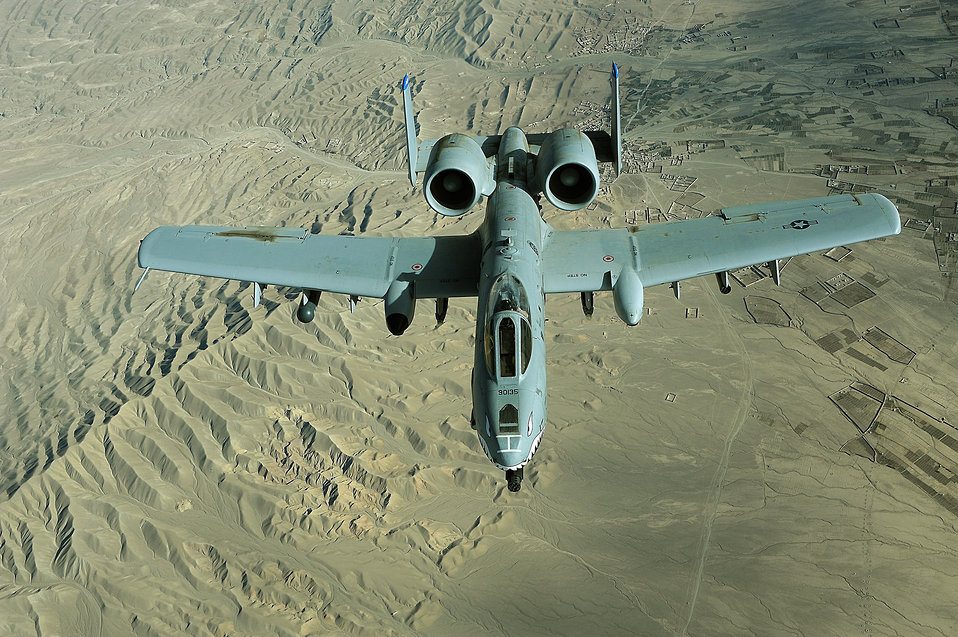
Dec. 3 airpower summary: A-10 bombs anti-Afghan forces

An A-10 Thunderbolt II flies a combat mission over Afghanistan providing armed aerial overwatch for coalition forces. A-10s provide close-air support and employ a wide variety of conventional munitions, including general purpose bombs.